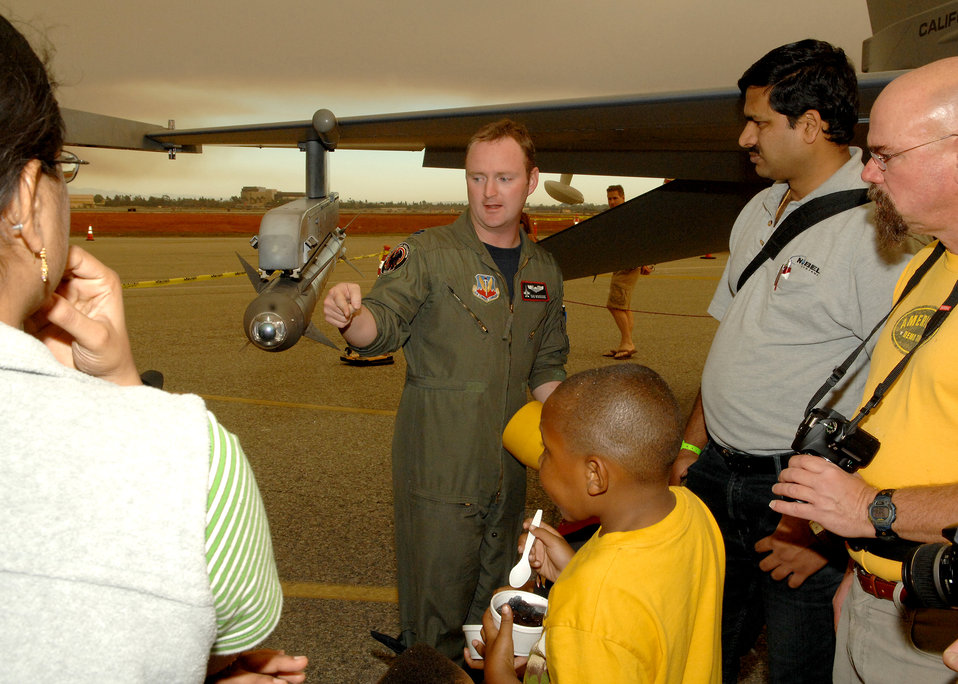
Wings over Long Beach

Capt. Dan Woodside talks to visitors about the F-16 Fighting Falcon during the Wings Over Long Beach airshow Nov. 15 at Long Beach Airport, Calif. The airshow was part of Air Force Week Los Angeles to showcase the Air Force, its people and the mission throughout the region. Captain Woodside is a pilot with the 194th Fighter Squadron from Fresno Air National Guard Base, Calif.